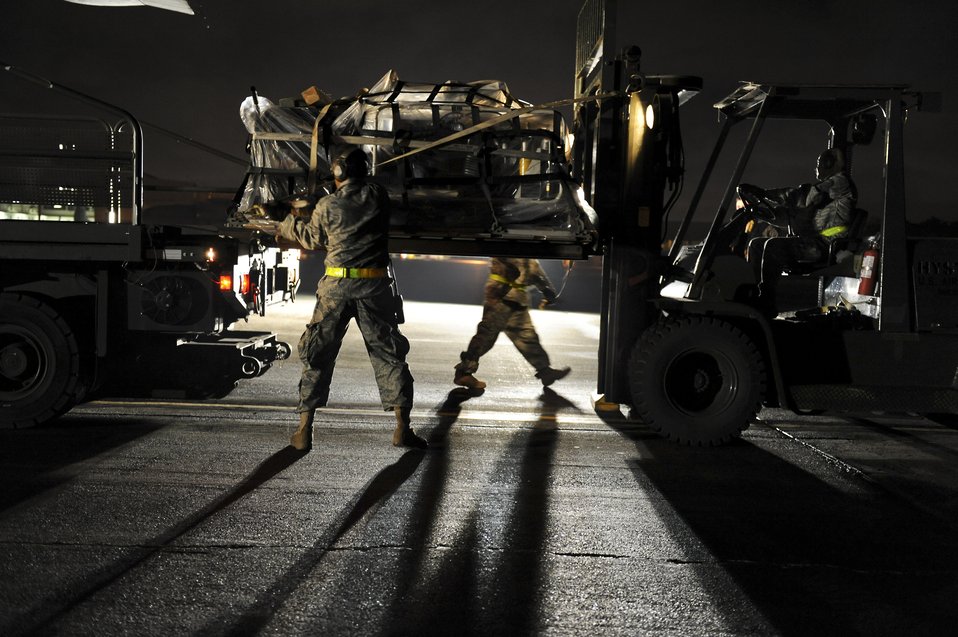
haiti night mission

Airmen from the Puerto Rico Air National Guard's 156th Airlift Wing load cargo onto a C-130E Hercules aircraft Jan. 16, 2010, to support the relief effort in Haiti in the aftermath of a devastating earthquake.